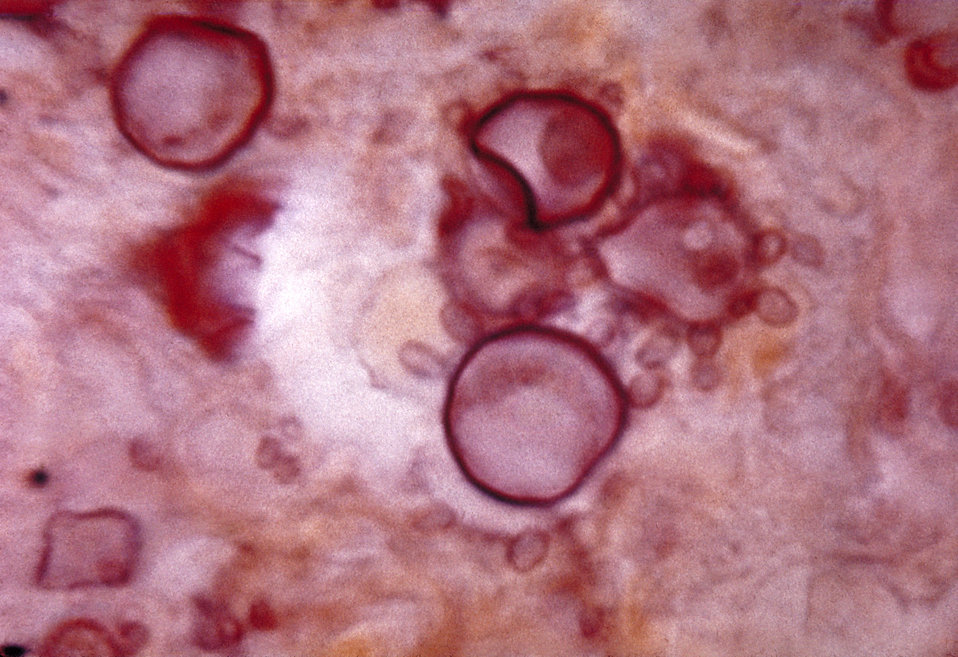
Histopathology of paracoccidioidomycosis.